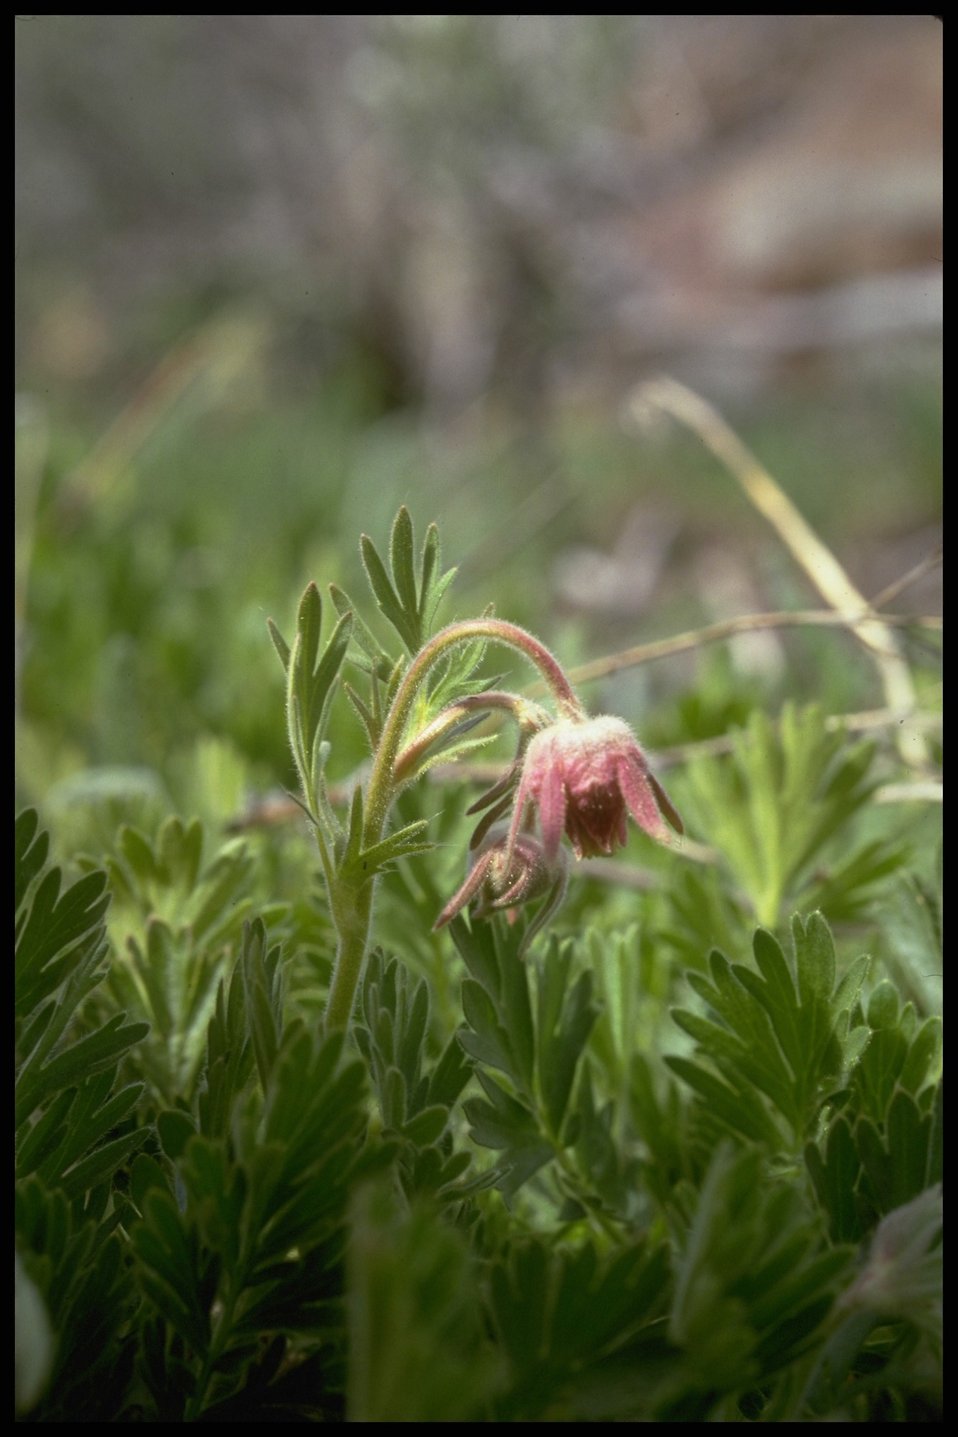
Close shot of Purple Avens wildflower, Lakeview District.